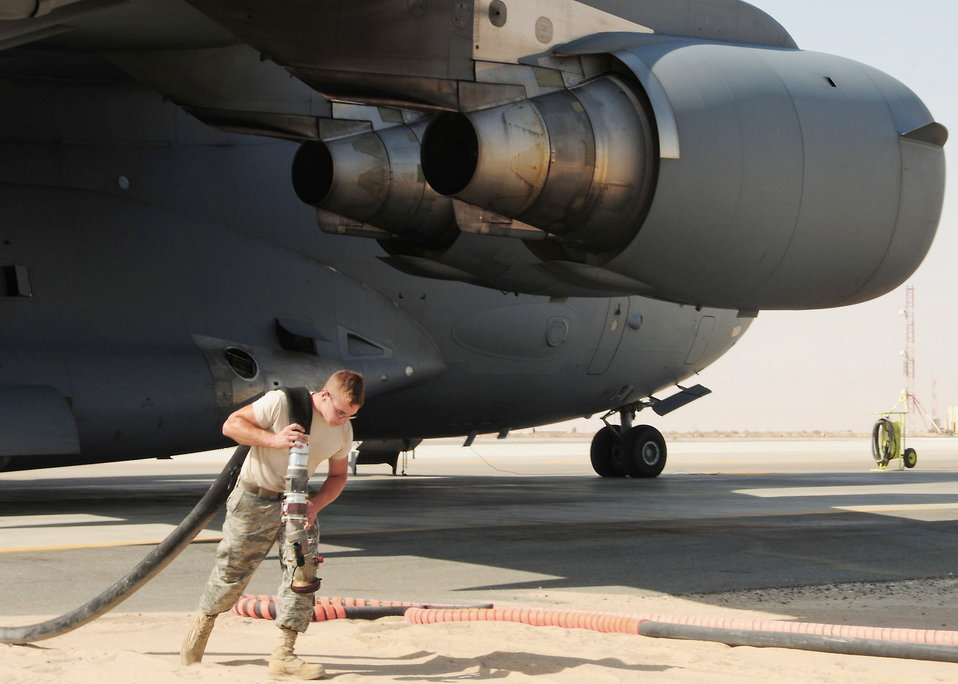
Heave-ho!

Senior Airman Alexander Andreassi drags a refueling hose away from a C-17 Globemaster III Sept. 3, 2009, at an air base in Southwest Asia. Airman Andreassi is a fuels distribution operator with the 386th Expeditionary Logistics Readiness Squadron and deployed from Little Rock Air Force Base, Ark.